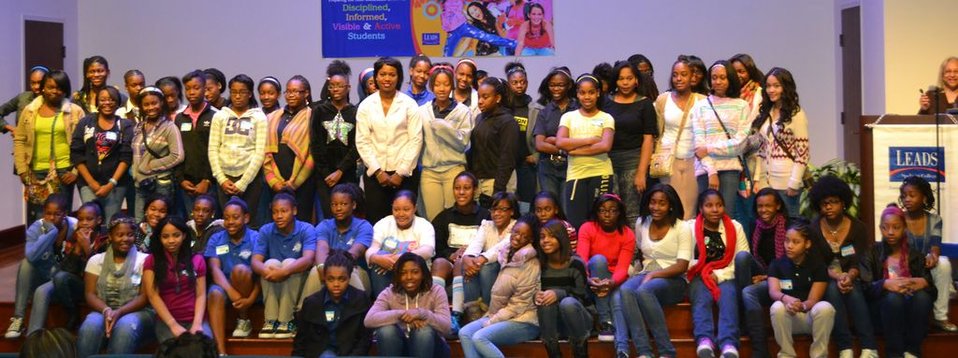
Group Shot: Participants of the Spelman Girls Leadership Institute

Participants of the Spelman Girls Leadership Institute gather with Dot Harris, Director of the Office of Economic Impact and Diversity, after her keynote opening remarks.